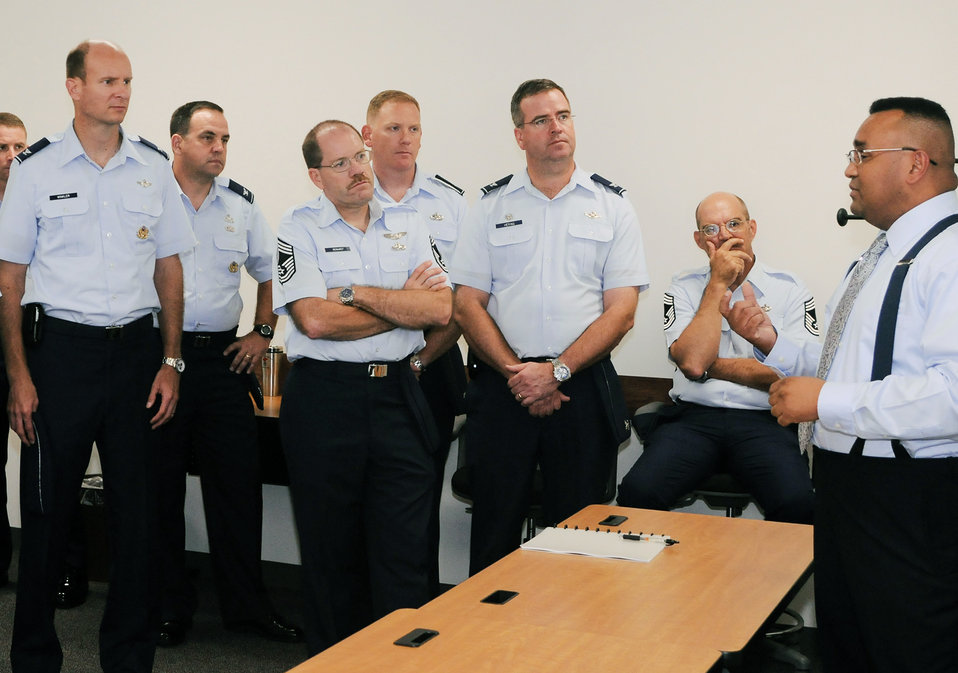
Yakota AFSO21

Vincent Anderson discusses the many changes to the new cargo deployment process Sept. 20, 2010, at Yakota Air Base, Japan. Leaders from both Kadena and Yokota air bases attended the senior leader's course for Air Force Smart Operations for the 21st Century. Mr. Anderson is the 374th Logistics Readiness Squadron installation deployment officer.